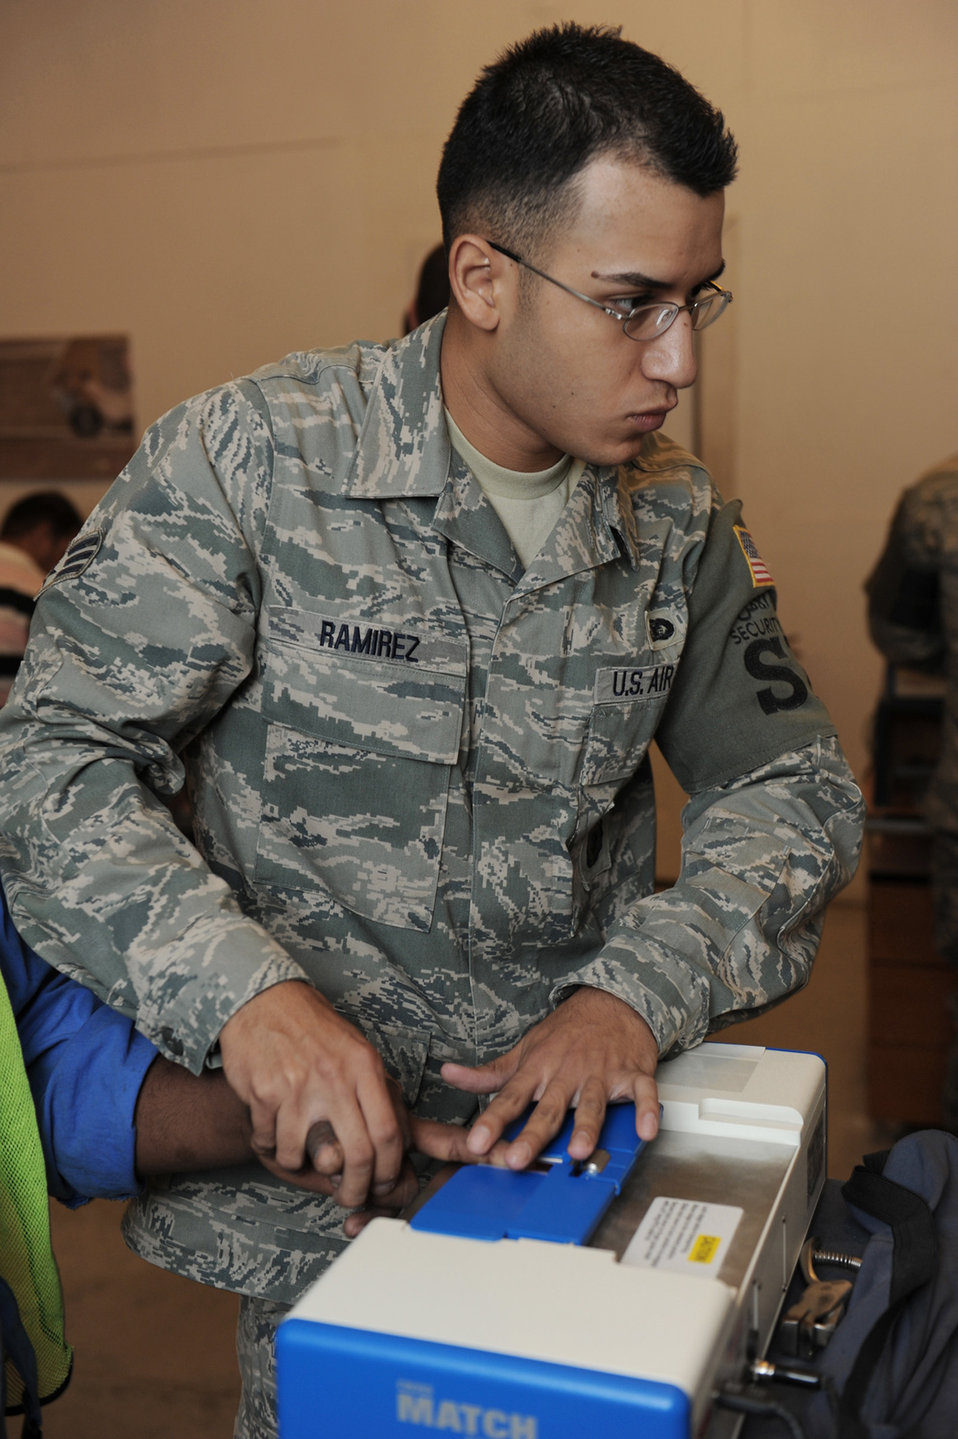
Biometric database offers security stamp of approval

Senior Airman Juan Ramirez processes a third country national into the Defense Biometrics Identification System Aug. 2 in Southwest Asia. DBIDS is an enhanced security system used to monitor entry onto military installations. Airman Ramirez is 379th Expeditionary Security Forces Squadron DBIDS registrar. He is deployed from Maxwell Air Force Base, Ala., and a native of Laredo, Texas.